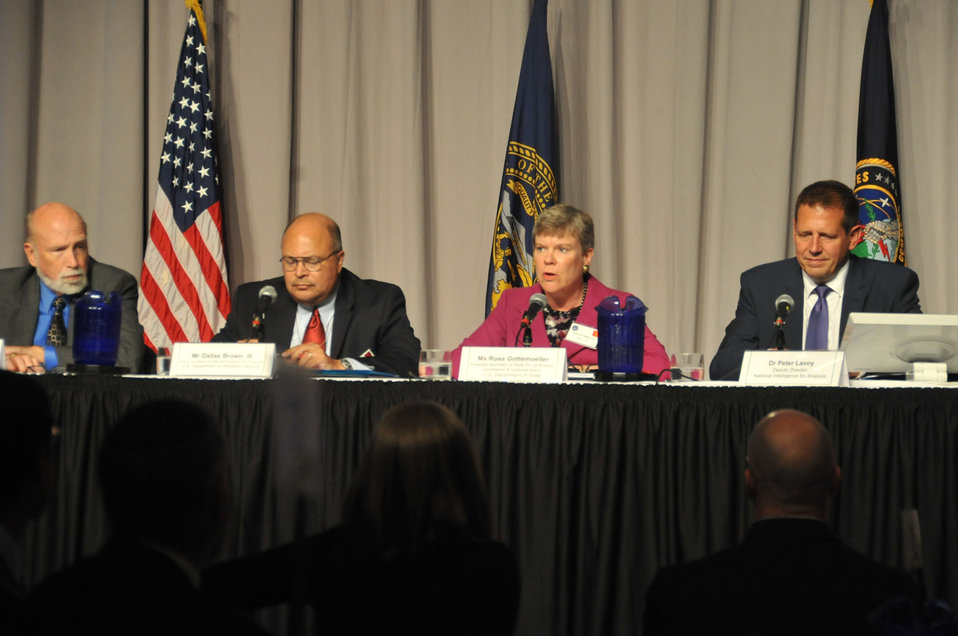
U.S. Strategic Command Deterrence Symposium: 21st Century National Security Panel

Panelists (left to right) Mr. Dallas Brown, III, Senior Counselor for National Protection and Programs, Department of Homeland Security, Ms.Rose Gottemoeller, Assistant Secretary of State for Verification, Compliance and Implementation, Department of State, and Dr. Peter Lavoy, Deputy Director of of National Intelligence for Analysis, speak during the 'Contributions of the U.S. Government to 21st Century National Security Strategy,' panel at the 2010 United States Strategic Command Deterrence Symposium, Aug. 11, 2010, at the Qwest Center, Omaha, Neb.
This annual symposium, brought together academic, government, military and international experts with the goal of exploring a broad range of deterrence issues during a single event. 'Exploring the Many Facets of Deterrence ' is the theme for the 2010 symposium.